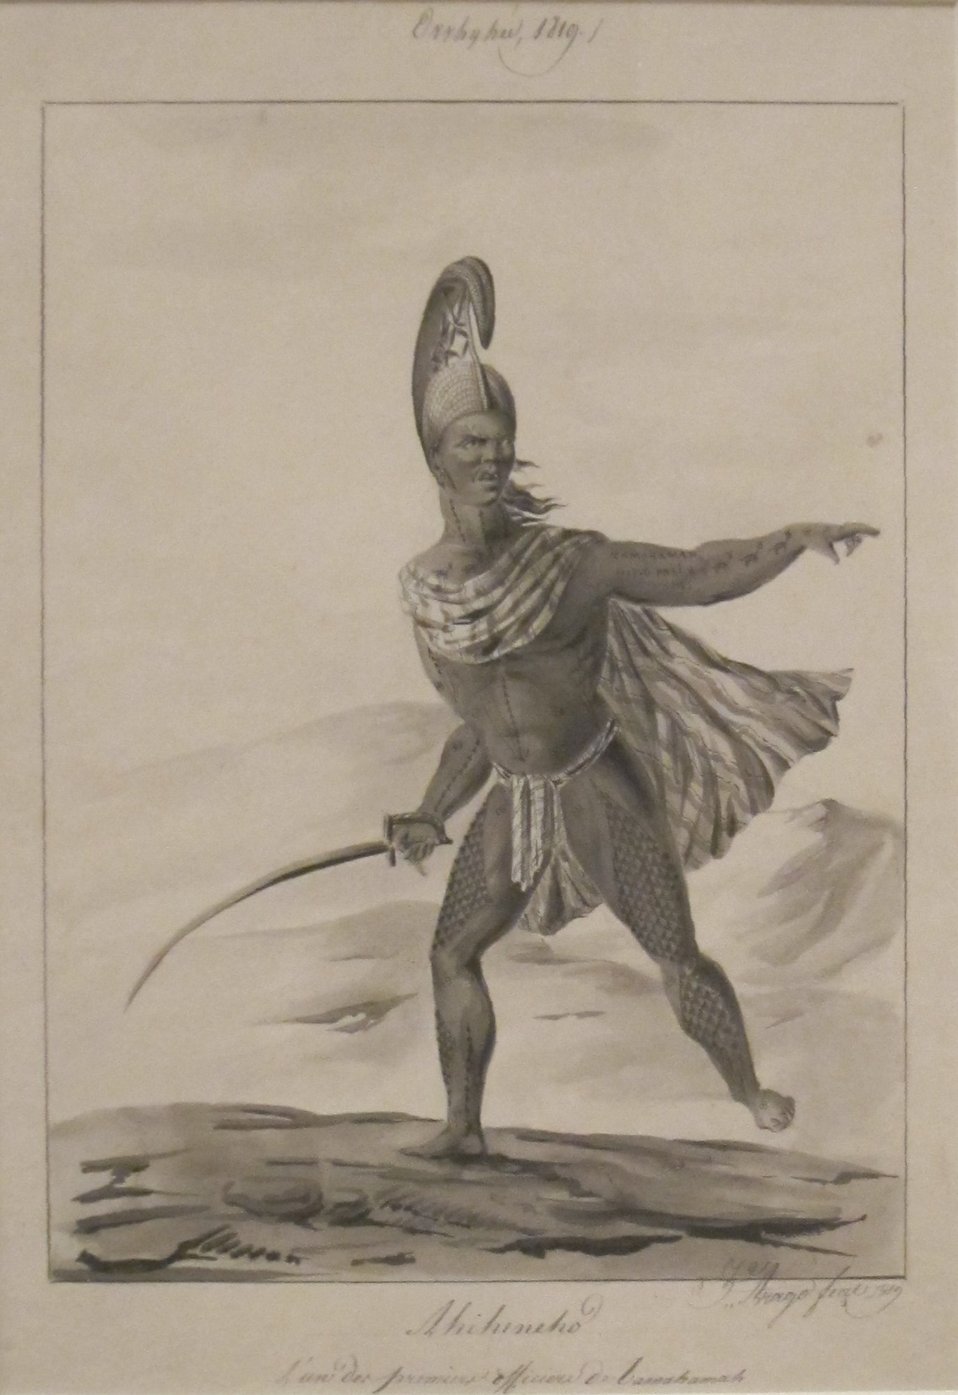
'Aniheneho. L'un des Premiers Officiers de Tahmahamah' pen and ink wash over graphite by Jacques Arago, 1819, Honolulu Academy of Arts